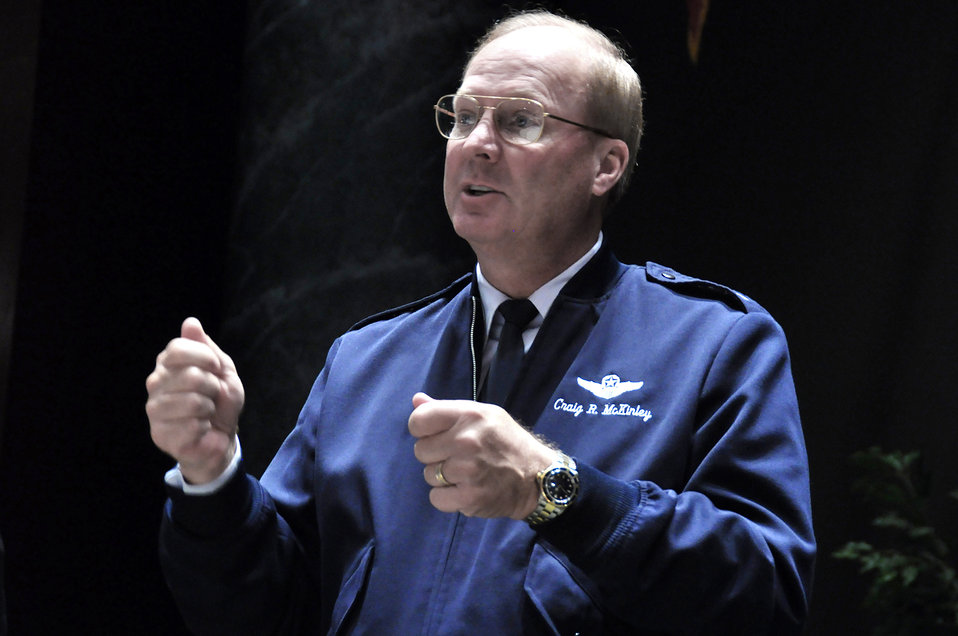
Guard chief encourages 'continual support' of families

Gen. Craig R. McKinley speaks to a Minuteman Institute for National Defense Studies audience Aug. 18 at the National Guard Memorial Building in Washington, D.C. General McKinley is the chief of the National Guard Bureau.